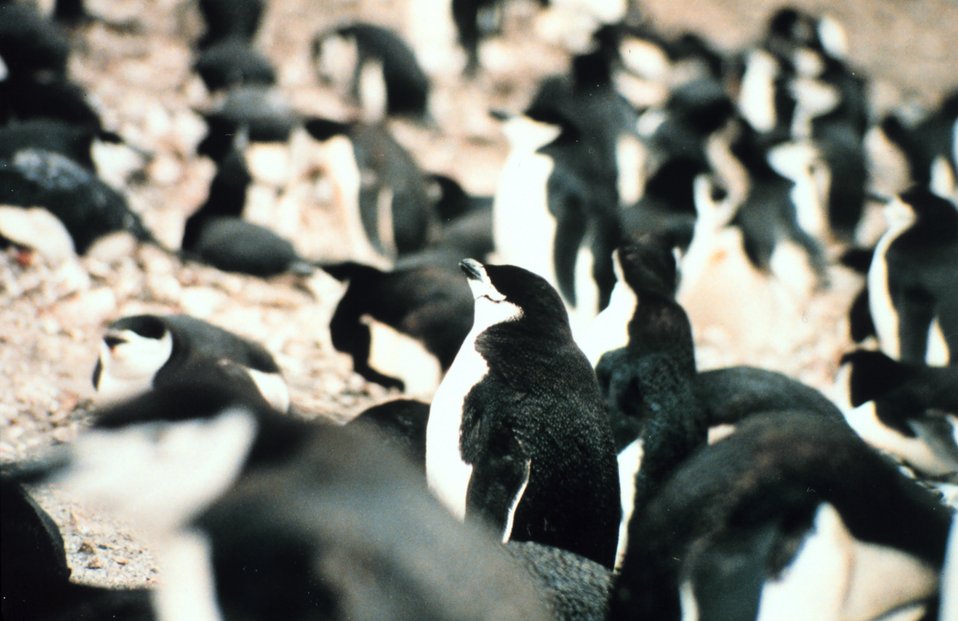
Seal Island chinstrap penguins.